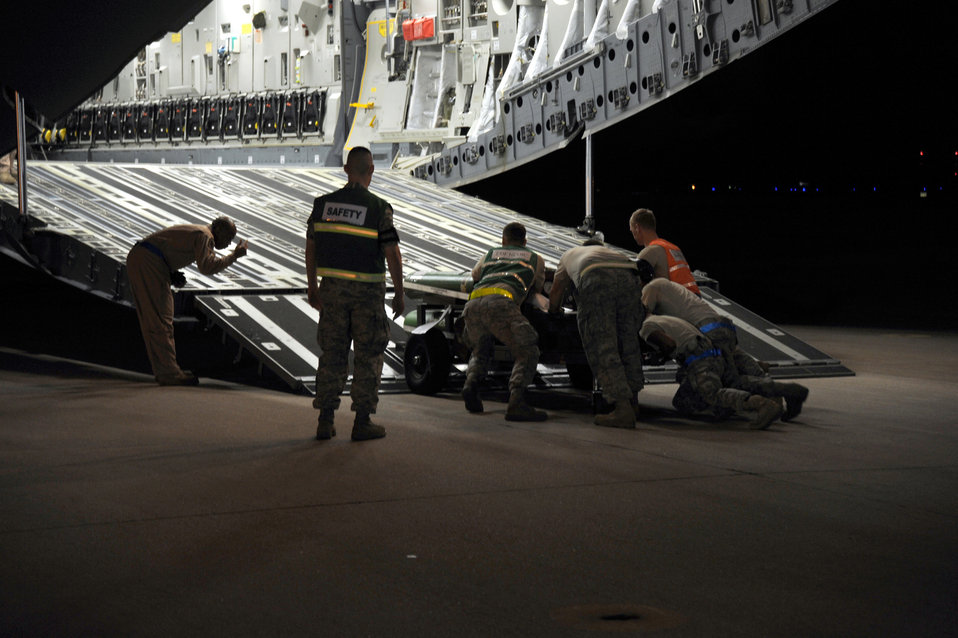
McConnell AFB Airmen take flight to support Libya operation

Staff Sgt. Daniel Sperry oversees the loading of a C-17 Globemaster III that will be flown to support Operation Odyssey Dawn March 20, 2011, at McConnell Air Force Base, Kan. McConnell AFB safety representatives regularly observe flight-line operations to ensure safety standards are met in order to reduce accidents and injuries. Sergeant Sperry is a ground safety technician assigned to the 22nd Air Refueling Wing.